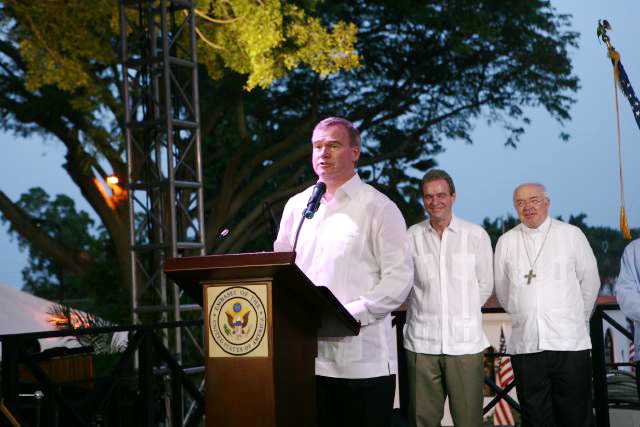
July 4th Celebration at U.S. Embassy in the Dominican Republic

Chargé dÁffaires Christopher Lambert addresses the guests and Embassy staff at the U.S. Independence Day celebration at the U.S. Embassy Santa Domingo in Dominican Republic at the Chief of Mission's Residence on July 2, 2010.